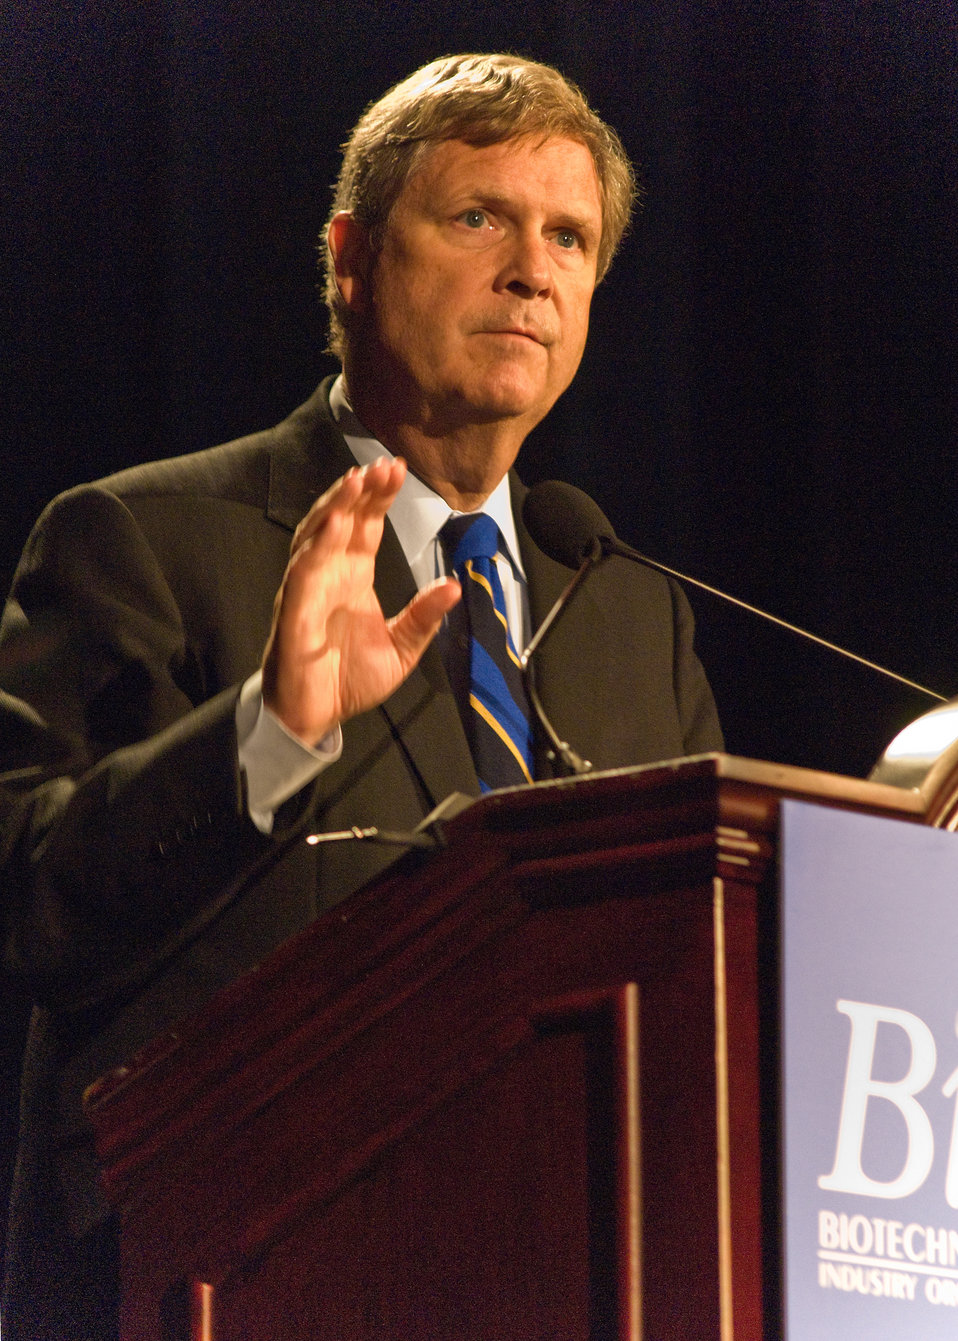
Agriculture Secretary Tom Vilsack spoke at the plenary general session, “The Marriage of Industrial and Agricultural” at the Bio – Biotechnology Industry Organization sponsored by The World Congress on Industrial Biotechnology and Bioprocessing at the National Harbor, DC on Tuesday, June 29, 2010. Secretary Vilsack discussed the partnership and cooperation of the federal government and private industry in developing biotechnology for farm, fuel and industry. USDA Photo 10di1423-093.